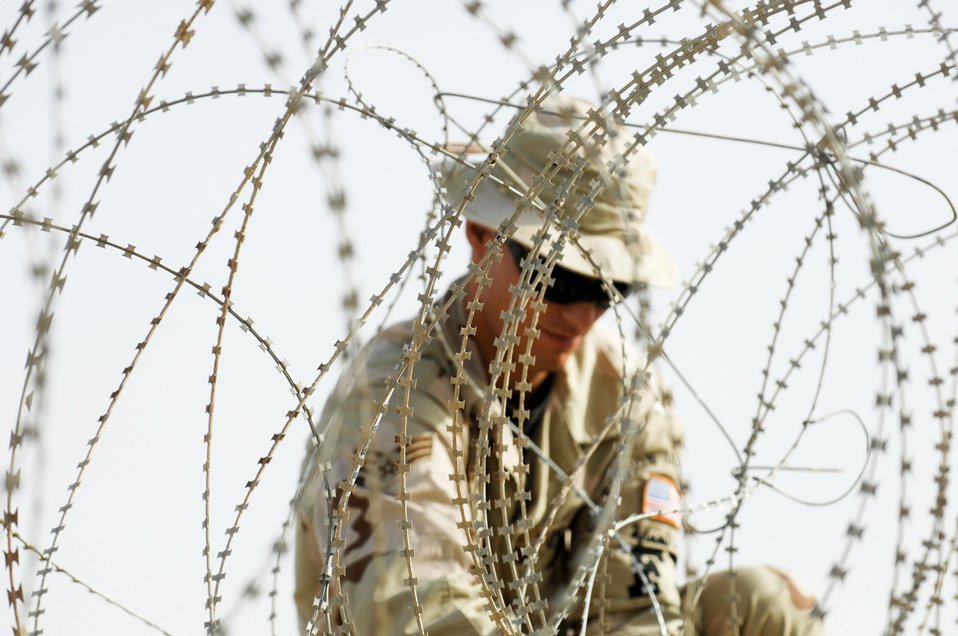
Wired for sound protection

Senior Airman Brian Brewster installs concertina wire June 8 on a wall to protect one of the compounds on Ali Air Base, Iraq. Airman Brewster is a member of the 407th Expeditionary Security Forces Squadron's Force Protection Flight. The flight is responsible for monitoring local and third country nationals to detect suspicious activity, augmenting security forces during increased threat levels, as well as monitoring and maintaining installation security measures.